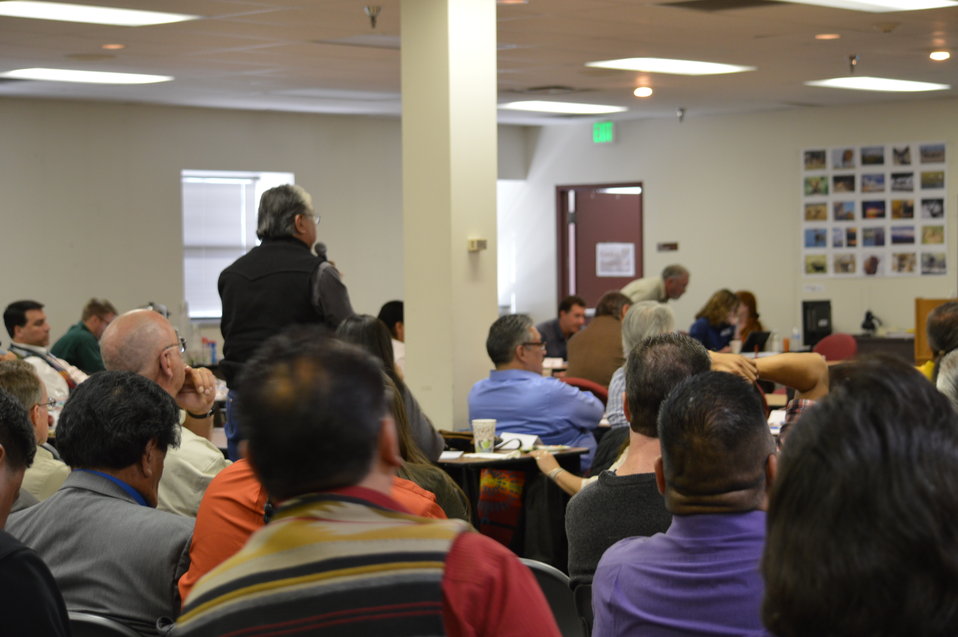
Eagle Summit III

Questions and comments at the Eagle Summit III in Denver, Colorado on March 20, 2014 at the Rocky Mountain Arsenal National Wildlife Refuge.